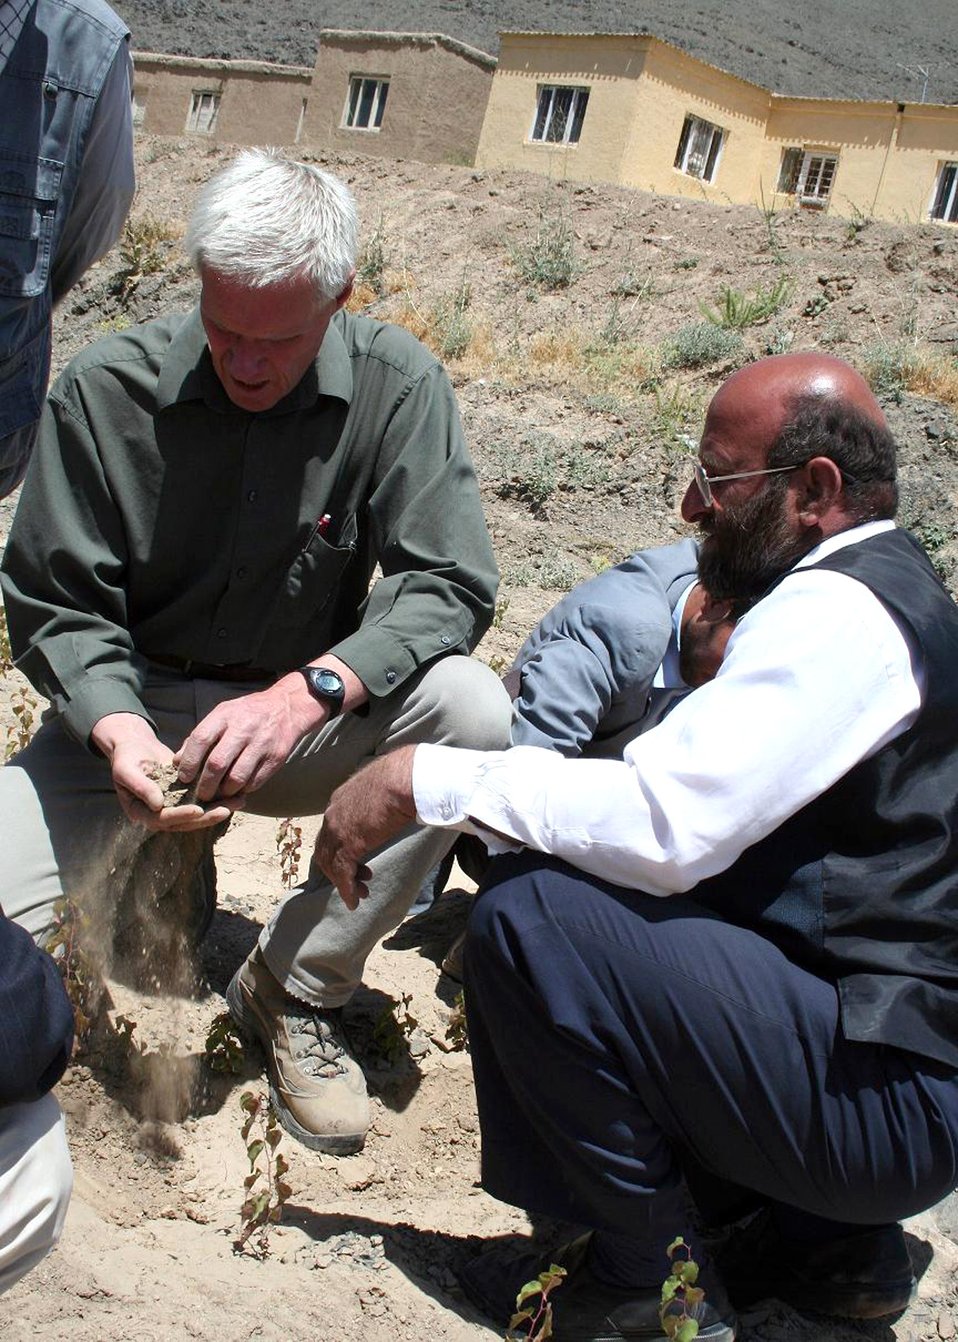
Agriculture day in Afghan province brings hope

Dr. Mike Gangwer, the U.S. Department of Agriculture representative for the Panjshir Provincial Reconstruction Team, and Mr. Habibullah, the Panjshir provincial director of agriculture, examine the suitability of soil in a fruit orchard on Tuesday, June 13.